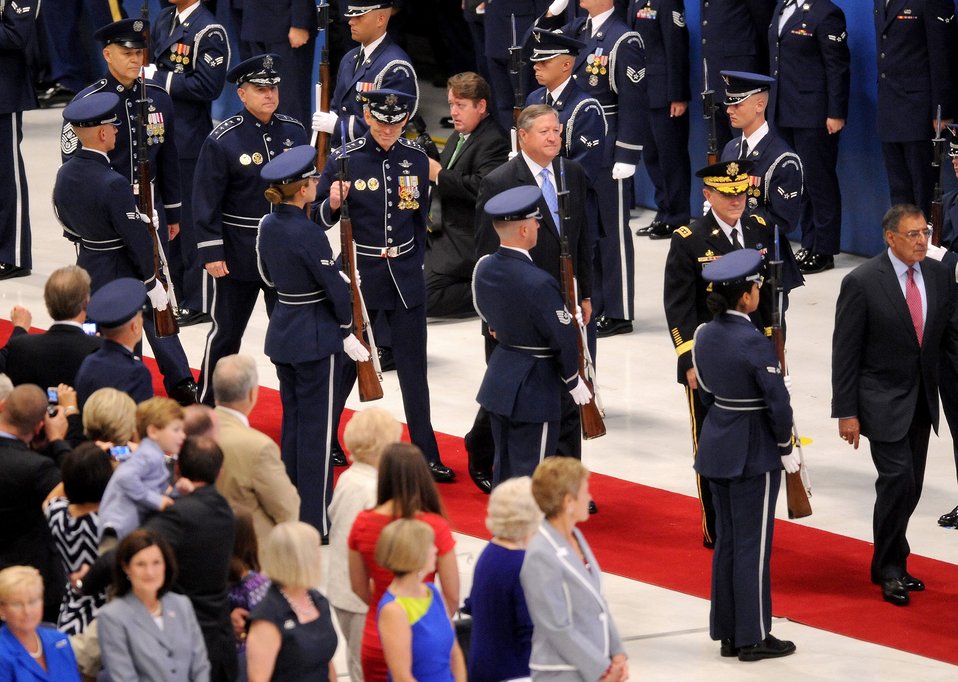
Welsh ‘humbled’ to serve as Air Force chief of staff

(Right to left) Secretary of Defense Leon Panetta, Chairman of Joint Chiefs of Staff Gen. Martin Dempsey, former Air Force Chief of Staff Gen. Norton Schwartz, current Air Force Chief of Staff Gen. Mark A. Welsh III and Chief Master Sergeant of the Air Force James Roy arrive during the Air Force Chief of Staff Retirement and Appointment ceremonies at Joint Base Andrews, Md., Aug. 10, 2012. Schwartz served in the Air Force for 39 years, the last four years as the Air Force’s senior uniformed leader. Prior to becoming the Air Force chief of staff, Welsh commanded U.S. Air Forces in Europe.